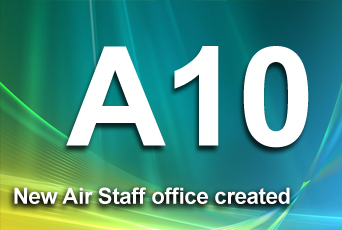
New air staff office created

The Strategic Deterrence and Nuclear Integration office, known as A10, has been created to strengthen the focus on the Air Force's nuclear enterprise.